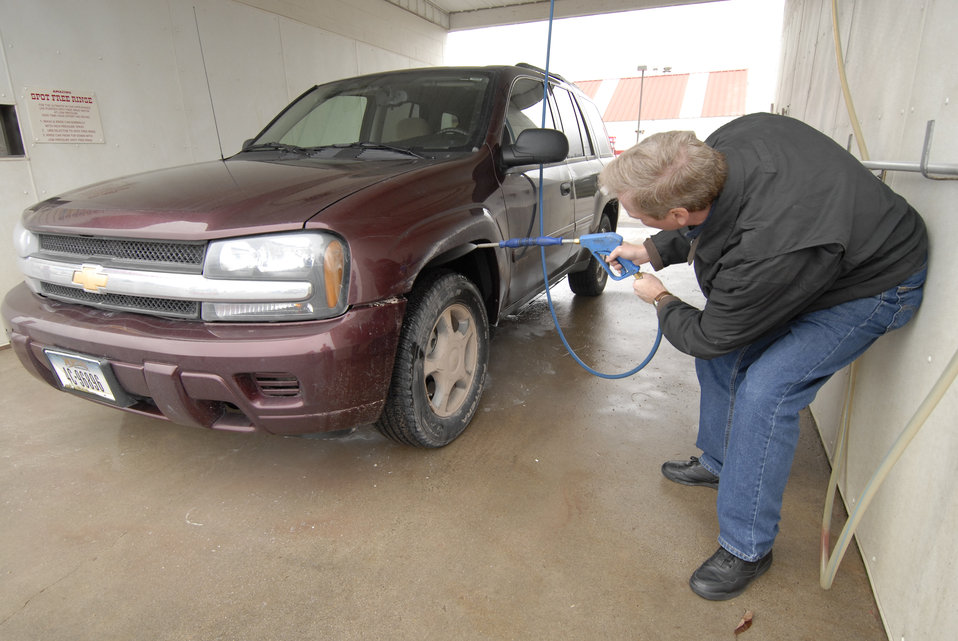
The U.S. Department of Agriculture’s (USDA) Forest Service (FS) invasive species program is to reduce, minimize, or eliminate the potential for introduction, establishment, spread, and impact of invasive species across all landscapes and ownerships. Invasive species have been characterized as a “catastrophic wildfire in slow motion.” Thousands of non-native invasive plants, insects, fish, mollusks, crustaceans, pathogens, mammals, birds, reptiles, and amphibians have infested hundreds of millions of acres of land and water across the Nation, causing massive disruptions in ecosystem function, reducing biodiversity, and degrading ecosystem health in our Nation’s forests, prairies, mountains, wetlands, rivers, and oceans. Invasive organisms affect the health of not only the Nation’s forests and rangelands but also of wildlife, livestock, fish, and humans. A washing station has been set up to allow visitors at the National Bison Range Wildlife Refuge in Montana to clean the underside and wheel-wells of their vehicles to prevent the spread of non-native weeds and grasses on November 17, 2007.